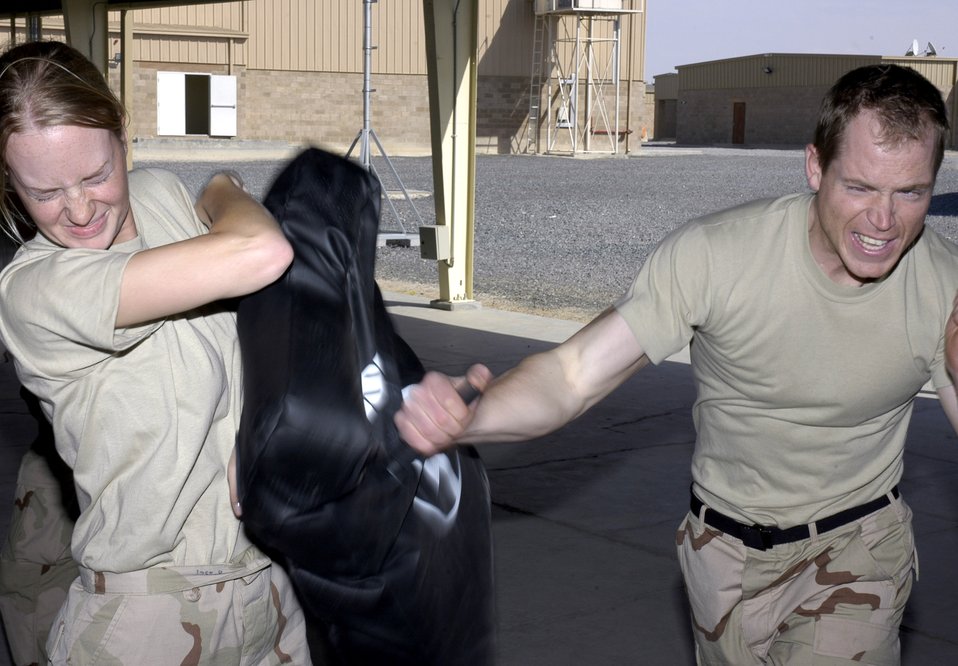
Defensive forces

Airman 1st Class Ashton Barnett (left) and Senior Airman Trenton Hamson, force protection members with the 386th Air Expeditionary Wing, take part in a personal defense class March 30 in Southwest Asia. All 386th AEW force protection personnel are trained in the use of the ASP, an extending baton used by police and security forces.